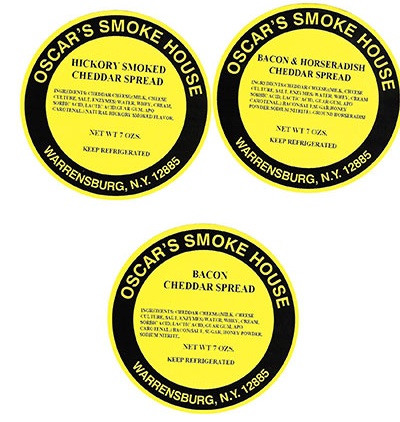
RECALLED – Cheese Spread

March 26, 2014 – Product Recall – Oscar’s Smokehouse, Inc. Recalls “Eleven Varieties (11) Of Cheese Spreads” Because of Possible Health Risk.